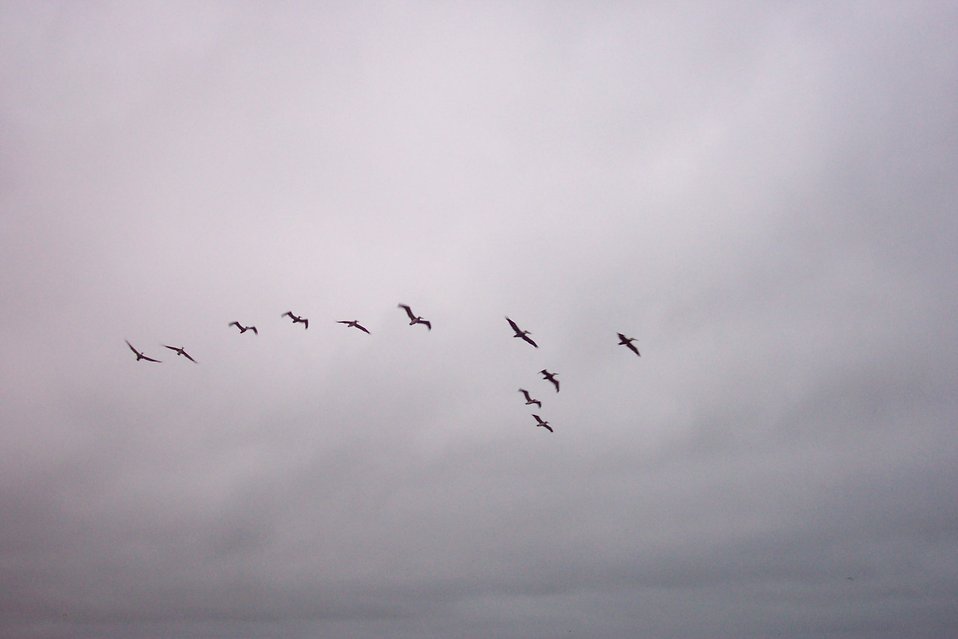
A flight of Brown Pelicans - Pelecanus occidentalis - as seen at Point Lobos.